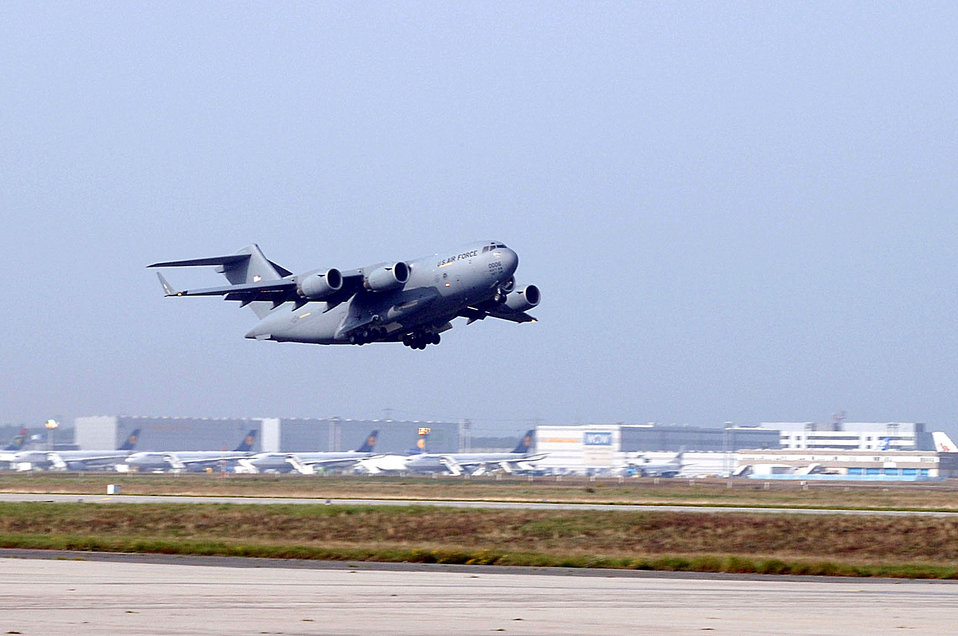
'Gateway to Europe' ends 60-year airlift legacy

RHEIN-MAIN AIR BASE, Germany (AFPN) --